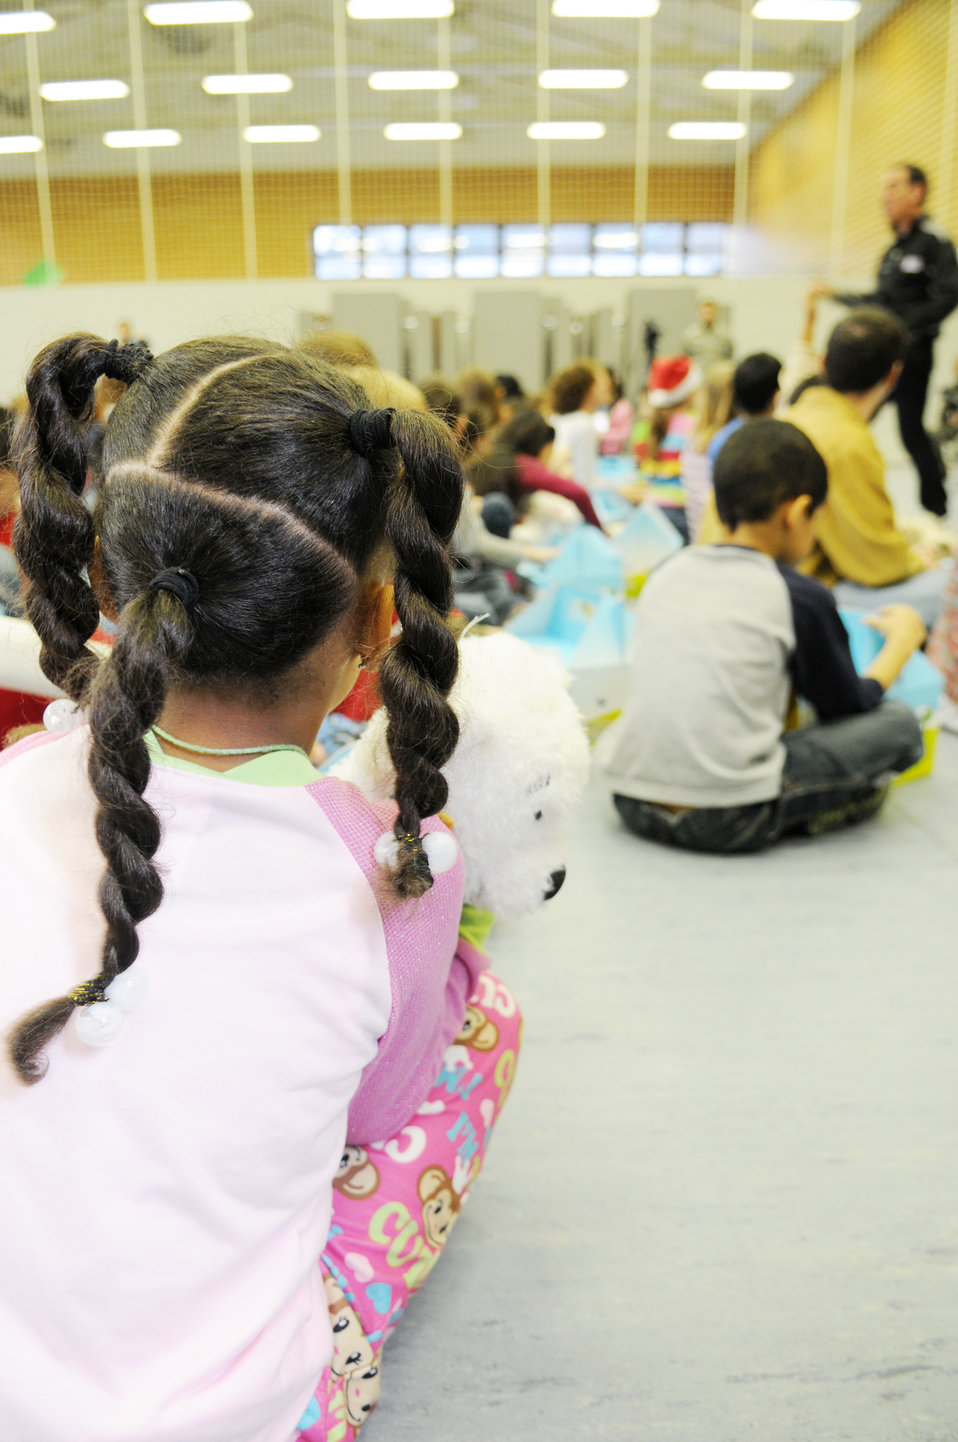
Kits help children cope with deployments

A child holds her new Cuzzie the Bear while listening to Trevor Romain at Ramstein Elementary School Dec. 17, 2009, at Ramstein Air Base, Germany. Cuzzie, who was once just a drawing in Mr. Romain's journal, is now the centerpiece of a new kit designed to comfort school-age children while their parents are deployed. Mr. Romain is a children's author.